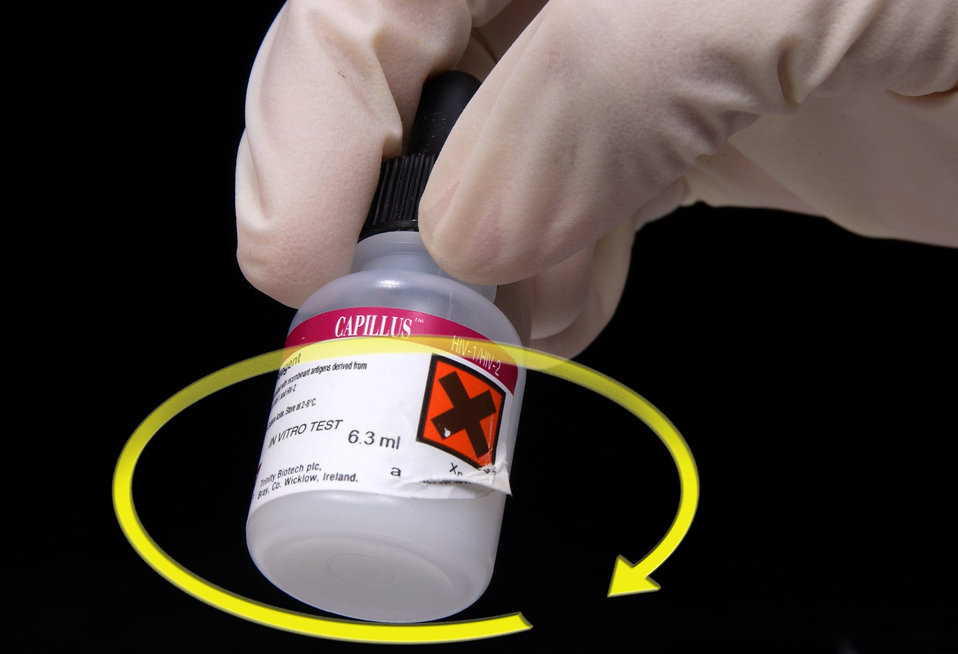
Mix the CAPILLUS� HIV-1/HIV-2 Rapid Test latex reagent well ensuring that it is a homogenous mixture. (Step 4 of 12)